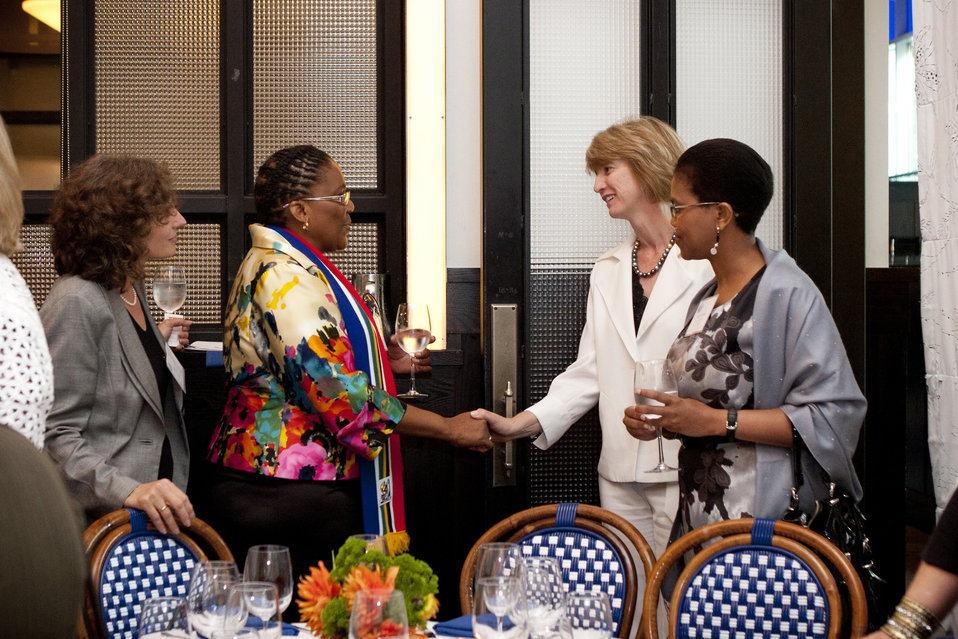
WomenandEnergy 32